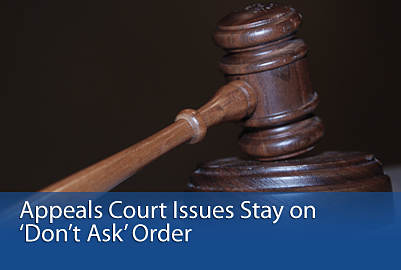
U.S. Air Force